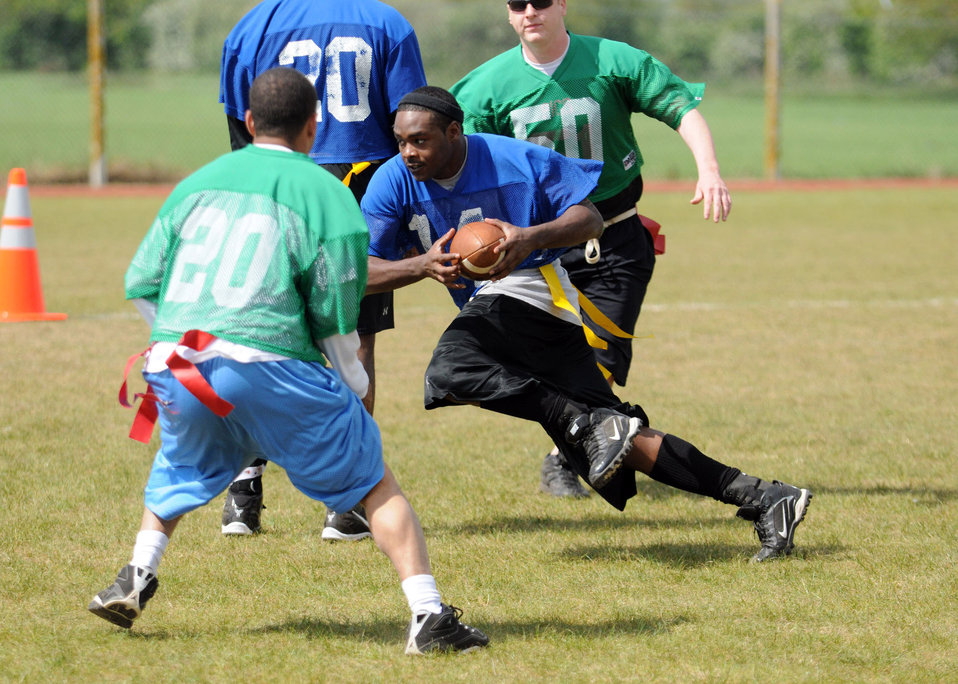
Wrecking the defense

At Royal Air Force Mildenhall, England, Senior Airman Chris Murray with the 100th Security Forces Squadron here slices through RAF Lakenheath's 48th SFS defense May 12 during a flag football game. The game was held as a part of